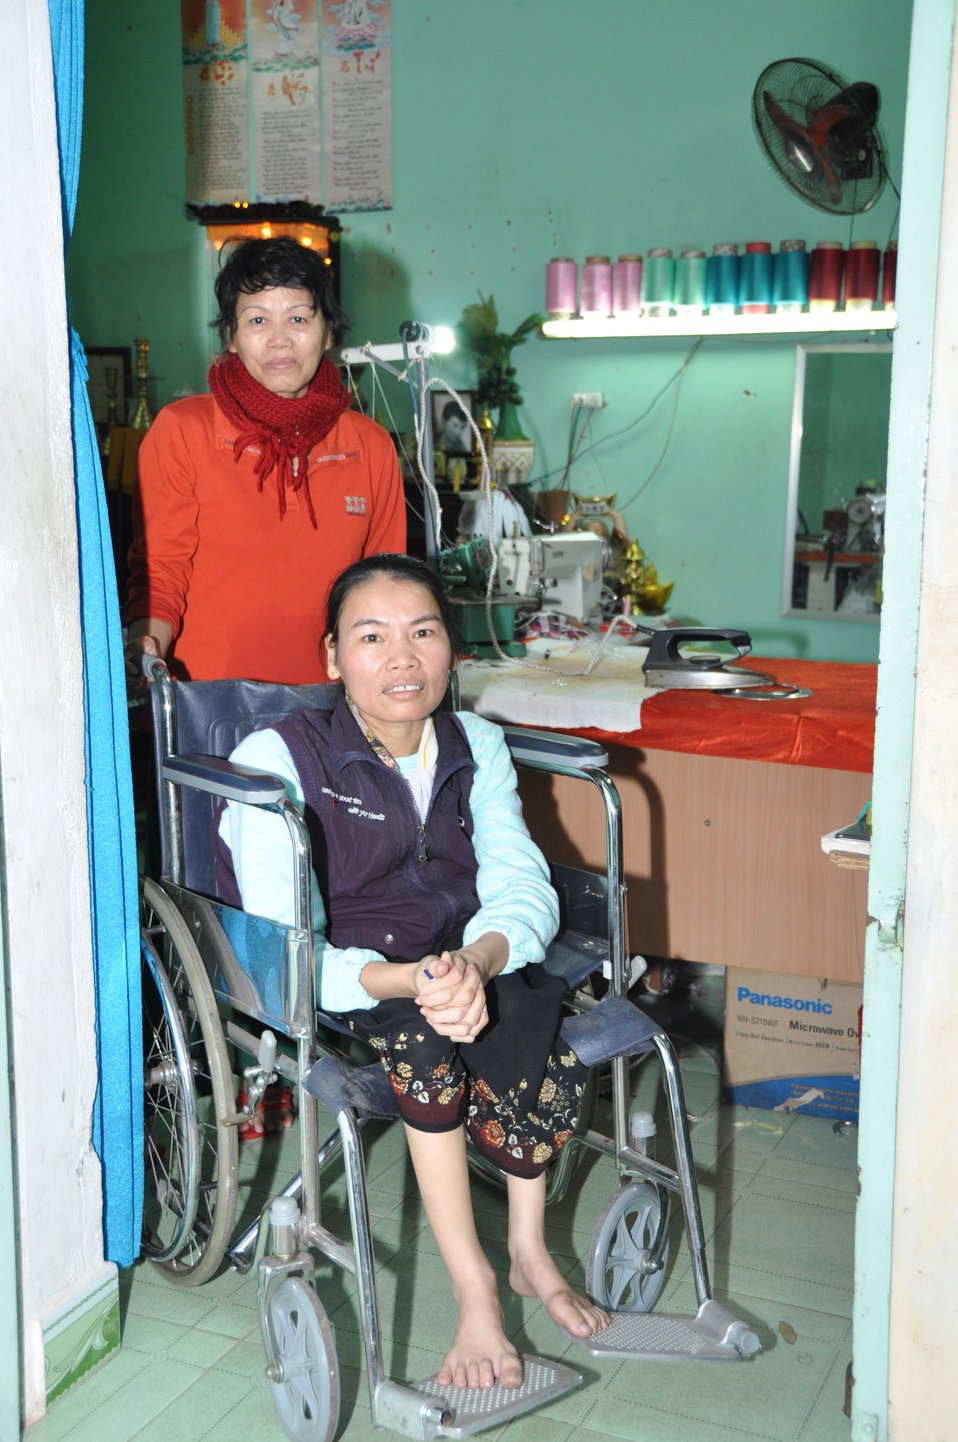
Le Thi Het receives support to boost her income from sewing.

Ms. Le Thi Het received a USAID-funded wheelchair and regular physical therapy services as part of a three-year project in Danang.